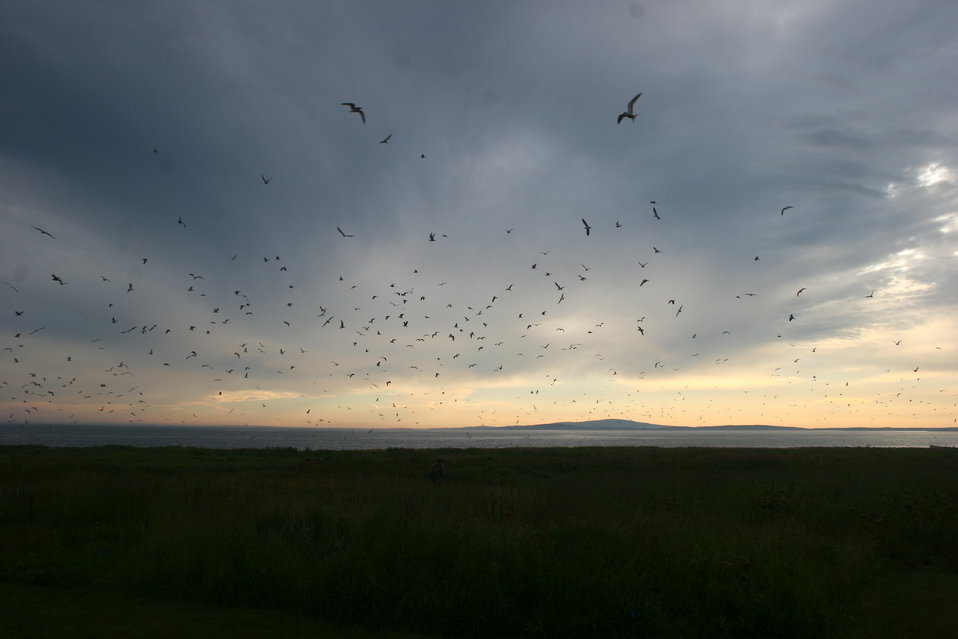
Island Birds At Sunset